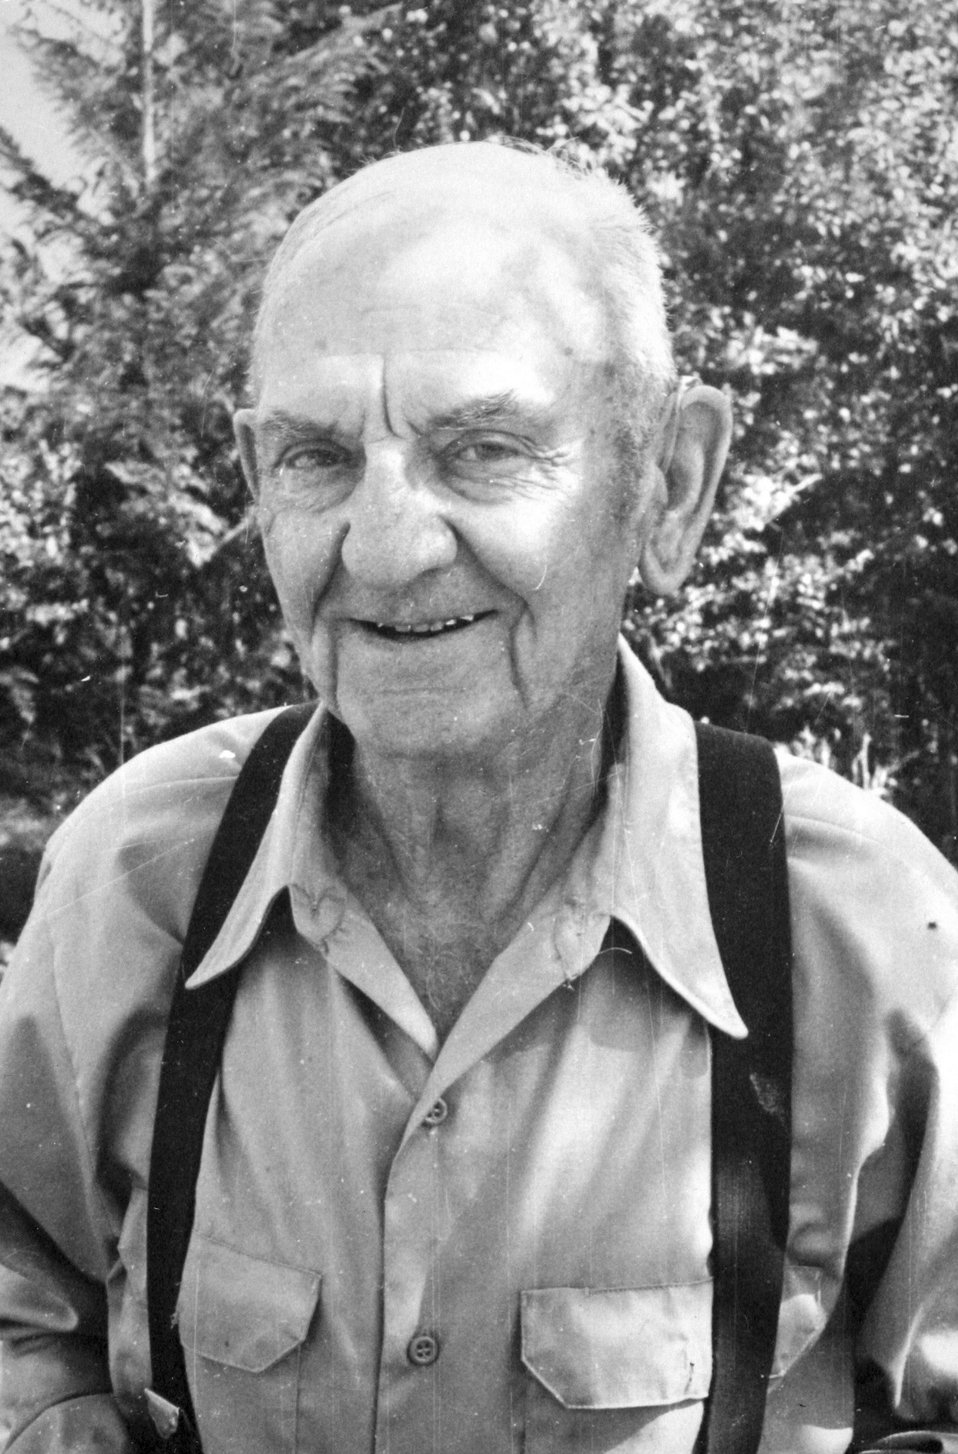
Glen Woodridge